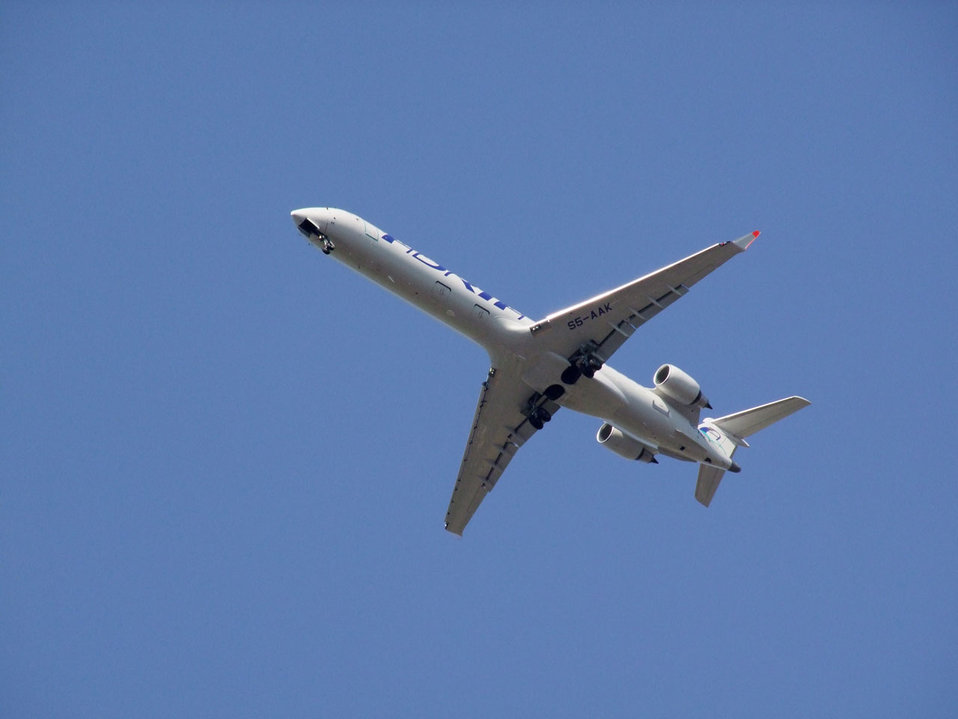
Jet

When walking on a hill i heard a jet.